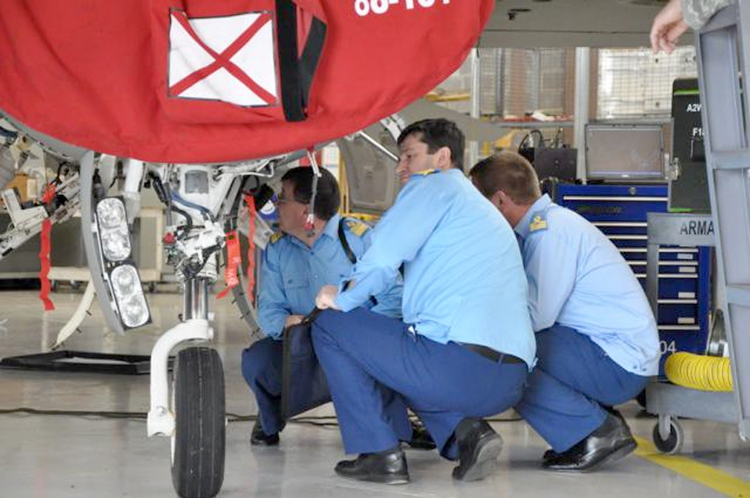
Romanian air force officers visit local Alabama Guard unit

Romanian air force officers look over an F-16 Fighting Falcon at the Alabama National Guard's 187th Fighter Wing during a recent visit as part of the National Guard's state partnership program.